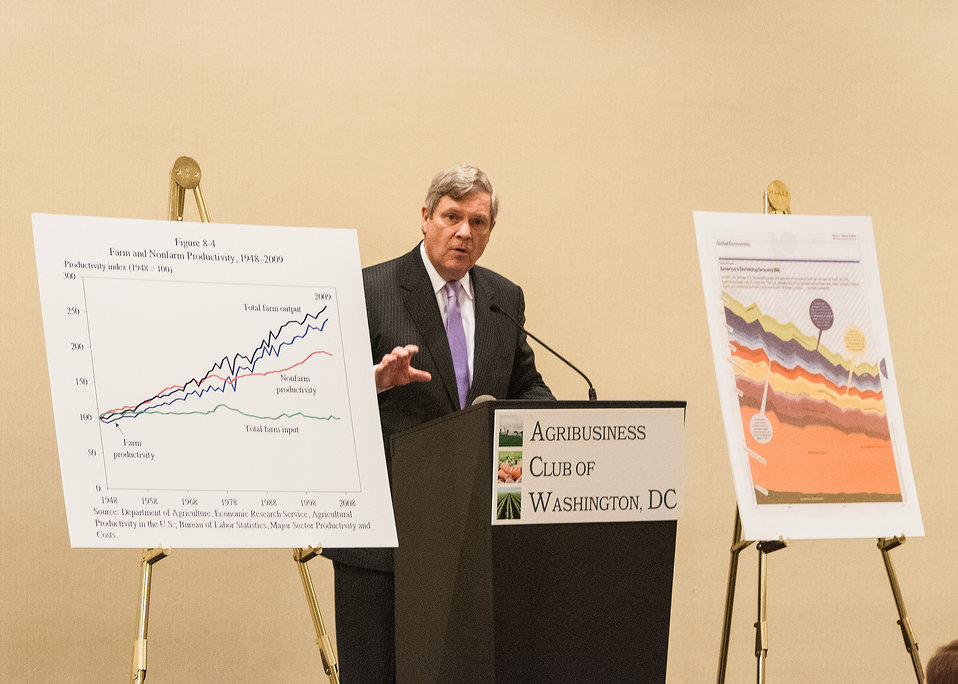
Agriculture Secretary Tom Vilsack spoke to the Agribusiness Club of Washington, D.C. on National Agriculture Day, Tuesday, Mar. 19, 2013. Secretary Vilsack discussed his four cornerstone priorities for the new rural economy – with special focus on building new markets for production agriculture and local/regional marketing of food. The graph to the right of Secretary Vilsack represents the progress in agriculture production form 1948-2009 and the graph to the left represents the progress in the cost of food in the same period.